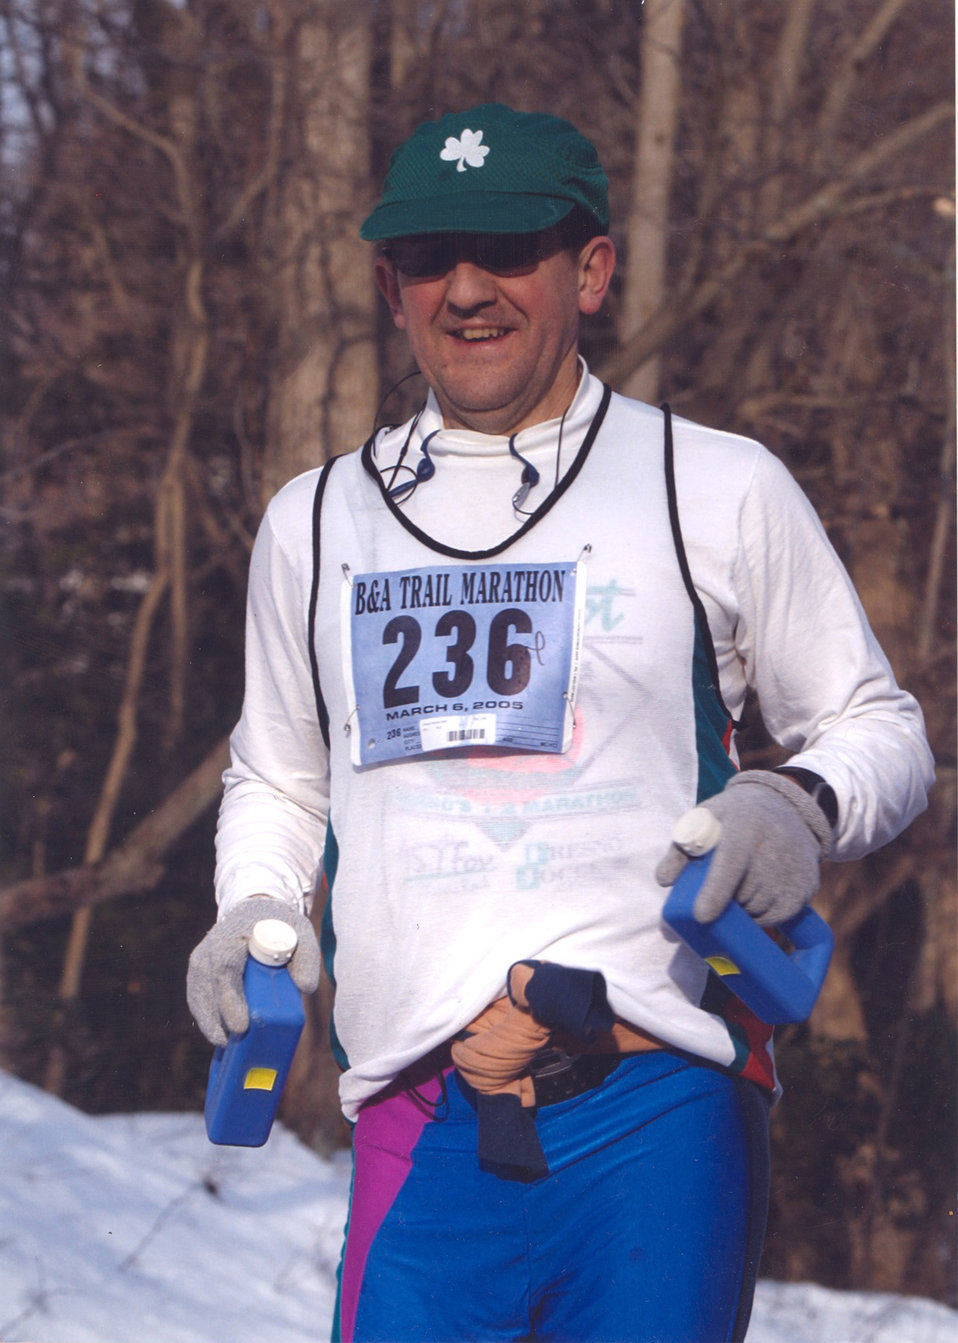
From 1.5 miles to 61 marathons

SEVERNA PARK, Md. -- Chief Master Sgt. David Hamel runs in his 60th marathon here recently. He finished the race in 4 hours, 37.50 seconds -- an average 11 minutes, 35 second pace per mile. Unlike other marathons, this was a trail run that covered rolling hills, rural back roads and bike trails. Chief Hamel has run 61 marathons in 35 states. He is working his way toward not only finishing at least one marathon in each state, but to complete 100 marathons. He is assigned to the 23rd Maintenance Squadron at Pope Air Force Base, N.C.